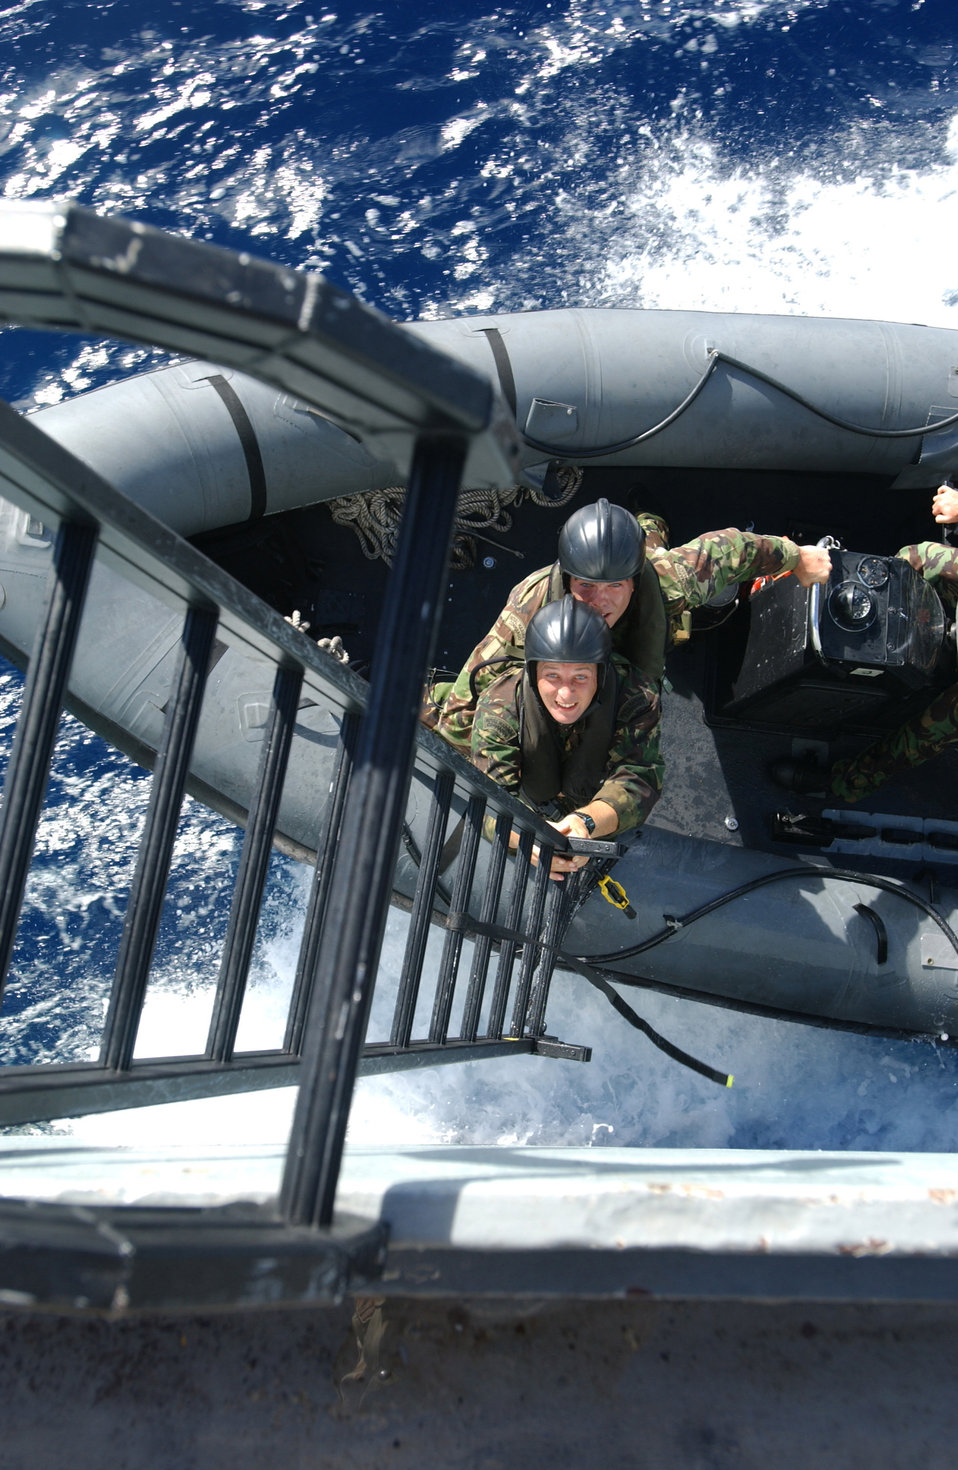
All aboard

OPERATION ENDURING FREEDOM -- Members of the 40th Expeditionary Security Forces Flight and the British Royal Marine Commandos prepare to board the S.S. Chesapeake at a forward-deployed location. The joint forces were participating in exercise Indian Sun.